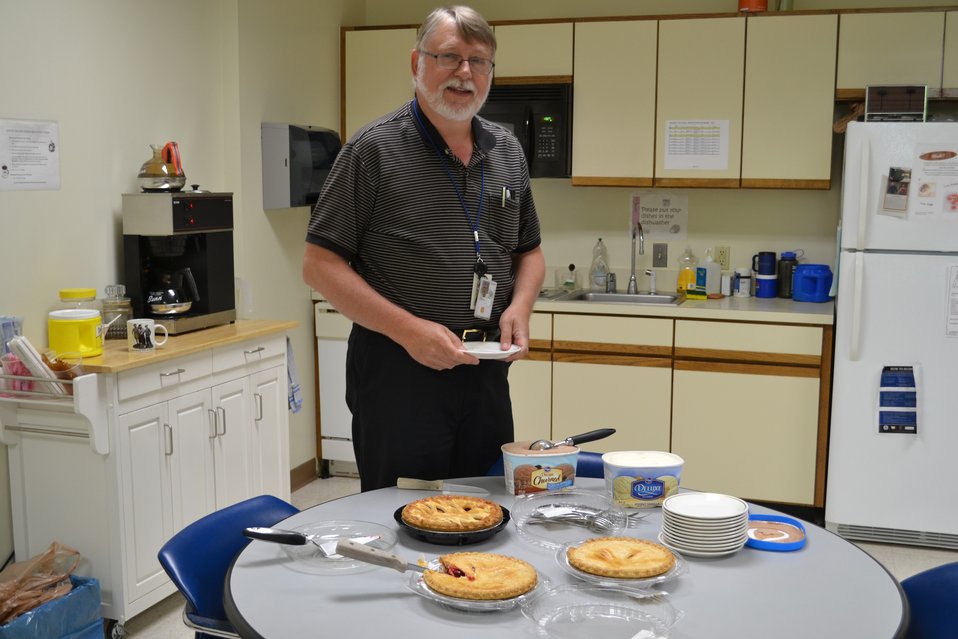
Ken Hafeli turned 62 years old. He stated, “I am eligible for the senior discount at Kohl's”. Let’s hope, Ken remembers where Kohl’s is located.; Location: Geral Ford Presidential Library, Ann Arbor, MI